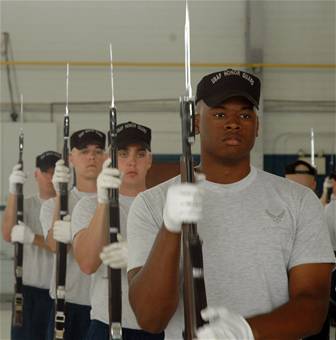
Drill team prepares for upcoming drill season

The Air Force Honor Guard drill team practices their newest routine March 30 during annual training held at Maxwell Air Force Base, Ala. The traveling component of the Air Force Honor Guard, the drill team serves as Air Force ambassadors to recruit, retain and inspire Airmen around the globe.